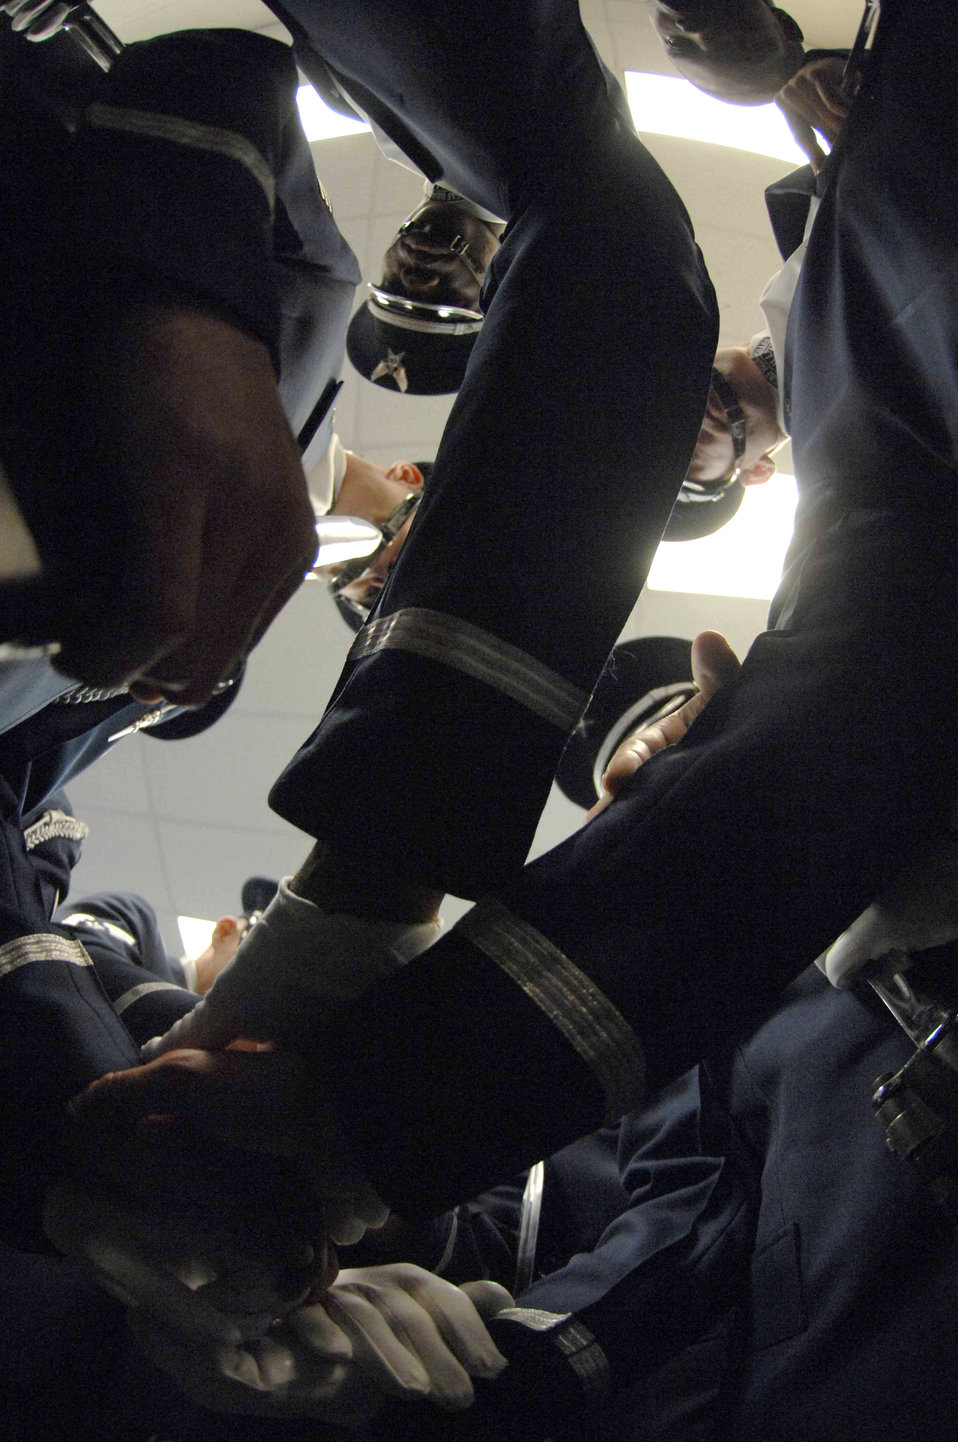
Vegas performance

Members of the Air Force Honor Guard drill team gather for a word of prayer before their performance at the Palo Verde High School Gym Nov. 6 in Las Vegas. The Air Force Honor Guard drill team is in Las Vegas for 14 performances throughout the military and civilian community. They will be performing during the Air Force 60th Anniversary Air Show and opening for Tops In Blue.